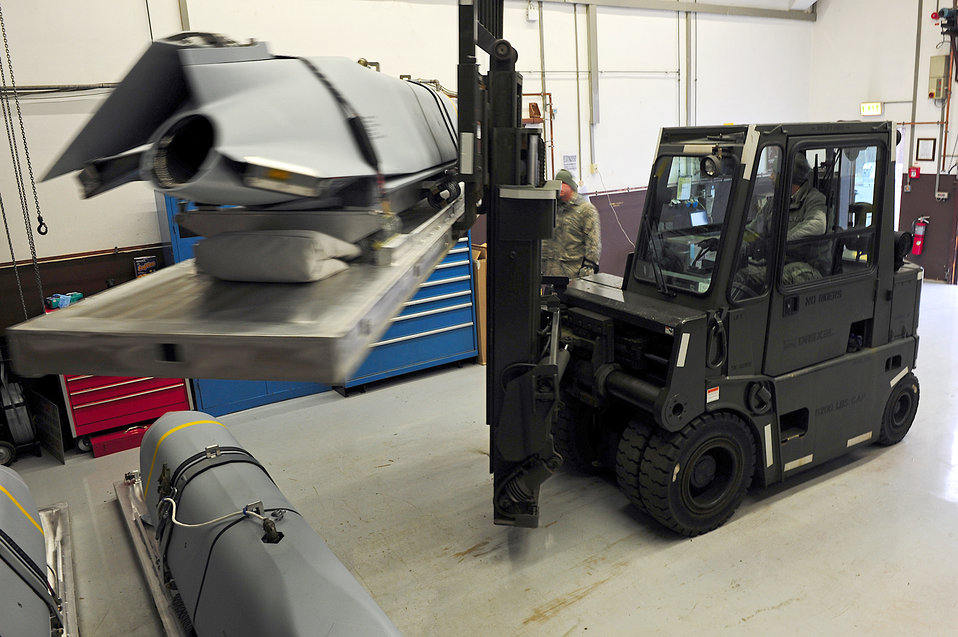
Missile modification

Airmen from the 86th Munitions Squadron get in position to secure a joint air-to-surface standoff missile Feb. 1, 2011, at Ramstein Air Base, Germany. The 2,000-pound, semi-stealth, long-range weapon requires various maintenance and test operations to ensure its efficiency.